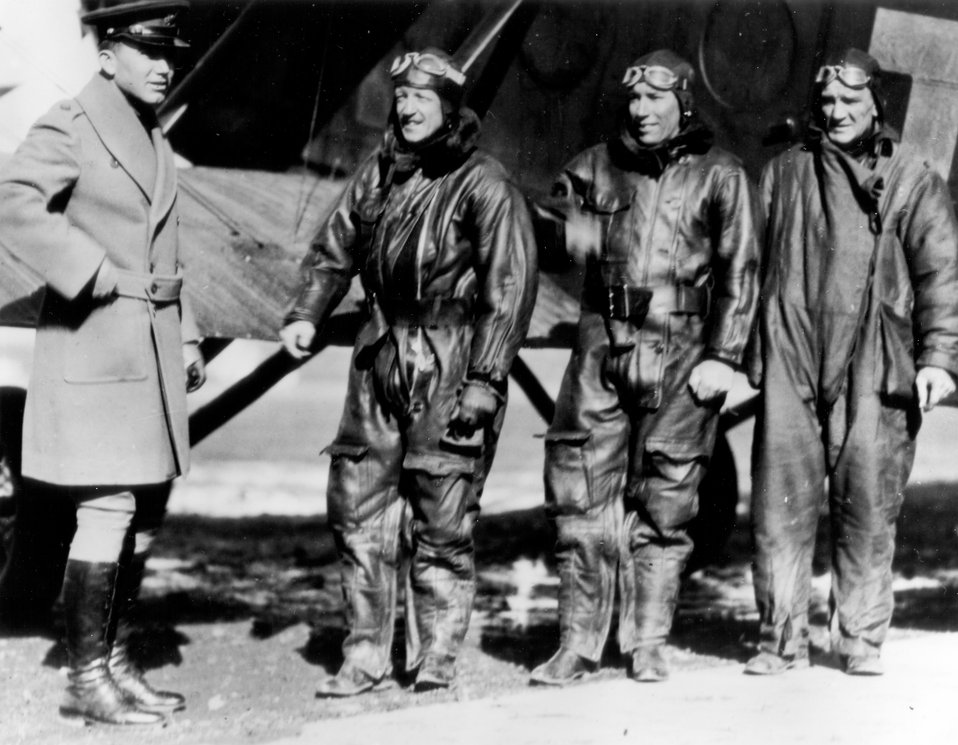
Question Mark crew

EARLY YEARS -- Flight of the